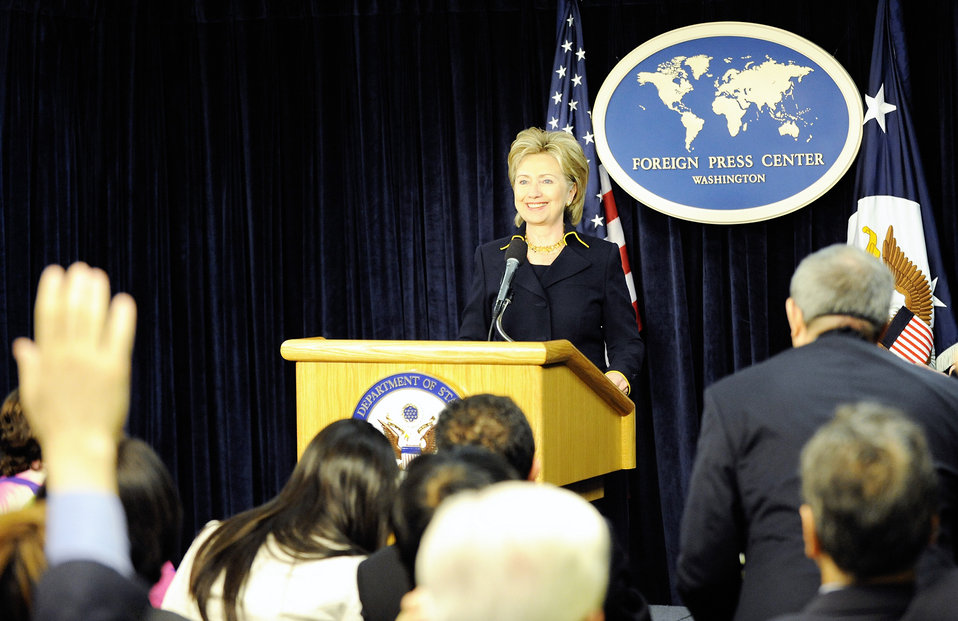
Secretary Clinton Marks Global Press Freedom Day at U.S. Foreign Press Center

U.S. Secretary of State Hillary Rodham Clinton briefs the press on U.S. commitment to global press freedom at the Foreign Press Center in Washington, DC May 19, 2009.